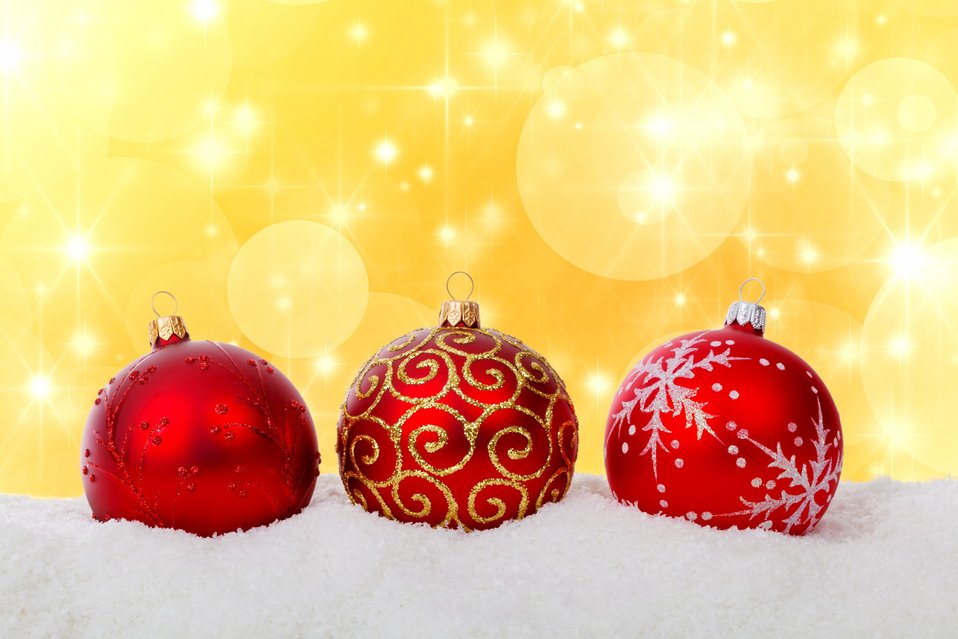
Red christmas balls in snow on golden background.